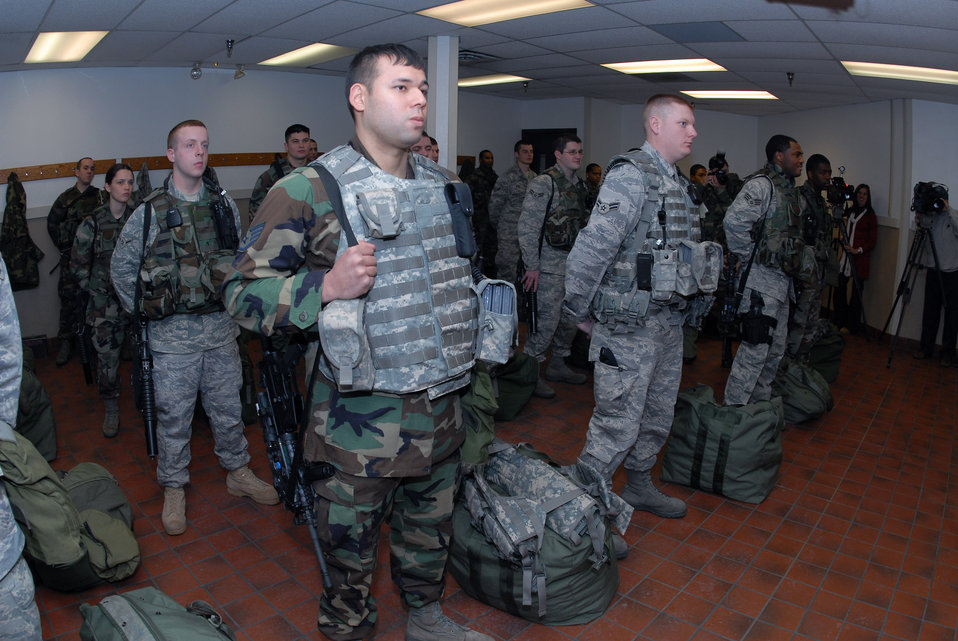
ANG forces deploy for missile security

Staff Sgt. John Chalupa (left) and Airman 1st Class Erik Foss (center) from the North Dakota Air National Guard's 219th Security Forces Squadron join active-duty Airmen from the 91st Missile Security Forces Squadron at Minot Air Force Base, N.D., at guard mount Dec. 18 prior to dispatching into the Minot AFB missile fields. Sergeant Chalupa and Airman Foss are the first ANG members to work the missile security mission with active-duty security forces Airmen.